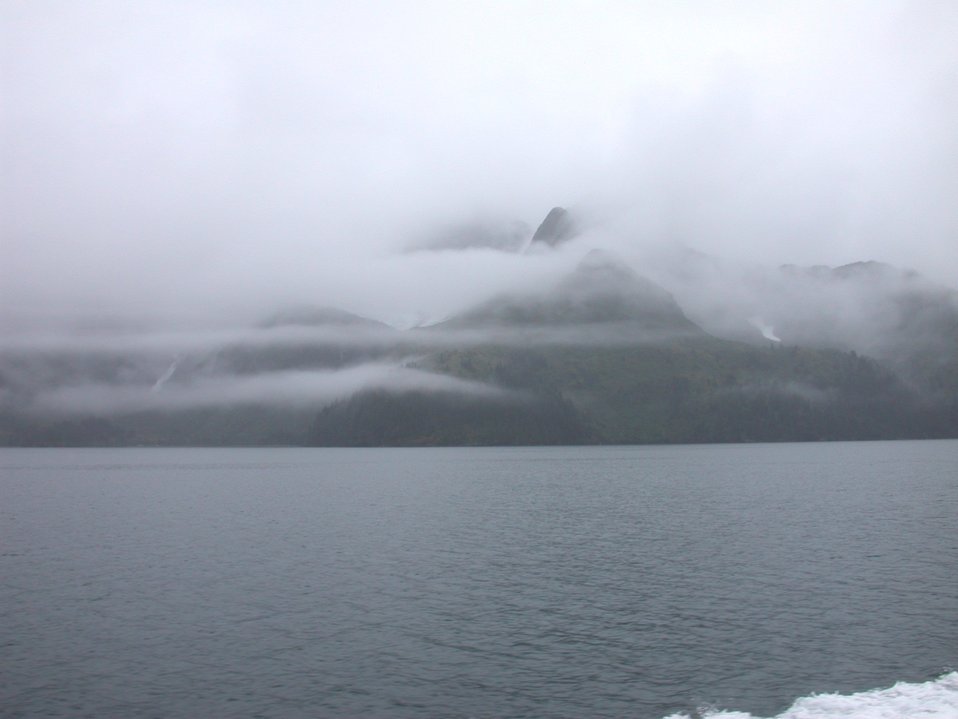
Leaving Seward on way to Kenai Fjords area from offshore.